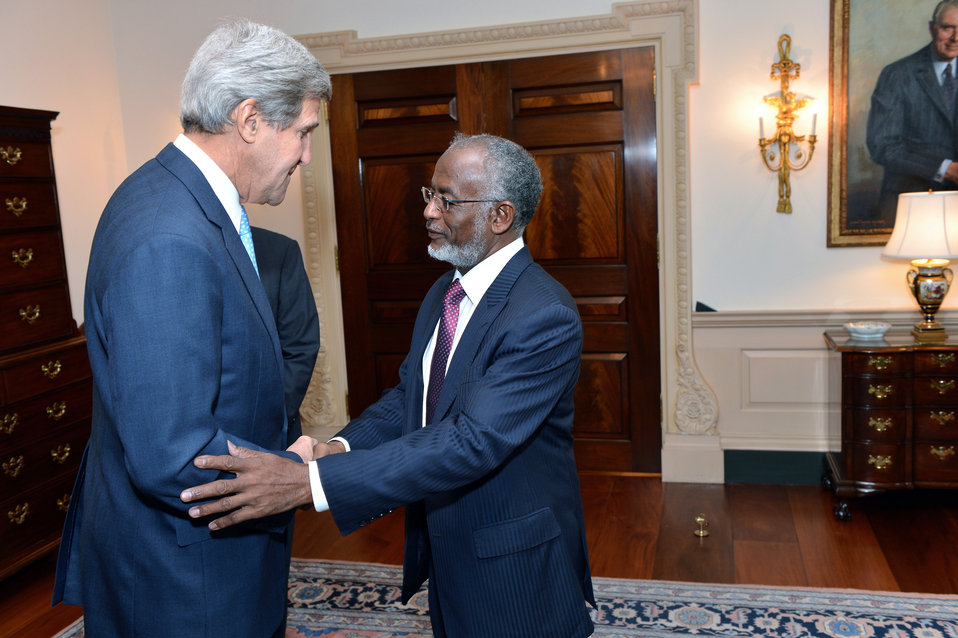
Secretary Kerry Meets With Sudanese Foreign Minister Karti

U.S. Secretary of State John Kerry meets with Sudanese Foreign Minister Ali Ahmed Karti at the U.S. Department of State in Washington, D.C., on September 30, 2013.